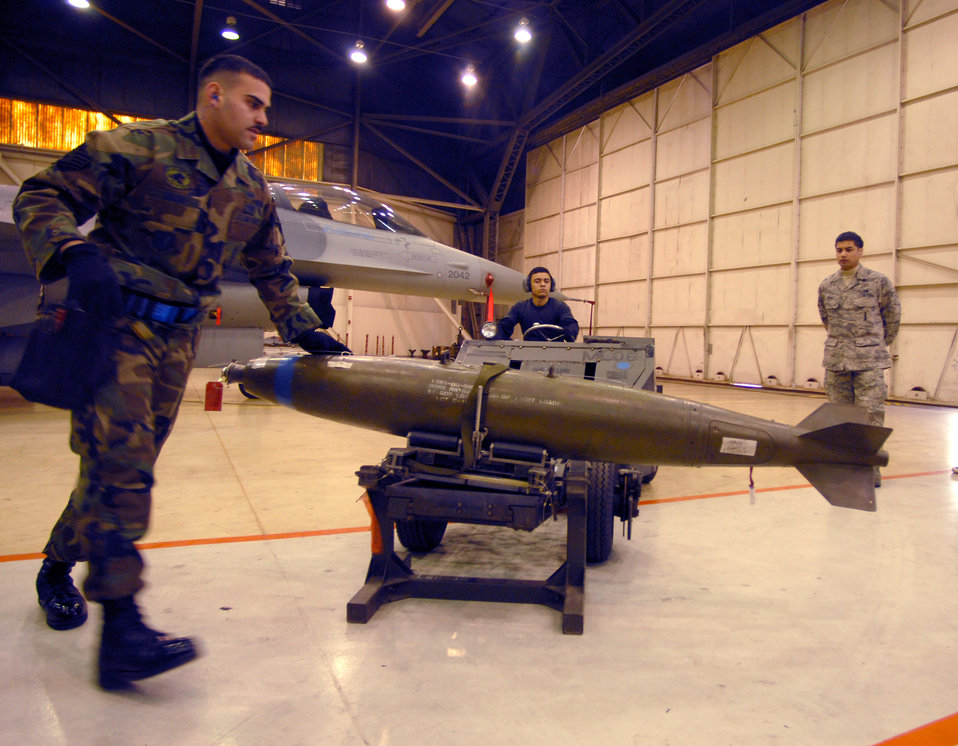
Heavy metal

Staff Sgt. Danny Colon (foreground) and Airman 1st Class Jay Maldonado (back left) prepare to move a bomb into position during the weapons load competition as Senior Airman Erwin Viray judges Dec. 14 at Kunsan Air Base, South Korea. This was the final weapons load competition between the 80th and 35th Fighter squadrons for 2007. Sergeant Colon and Airman Maldonado are from the 8th Aircraft Maintenance Squadron.